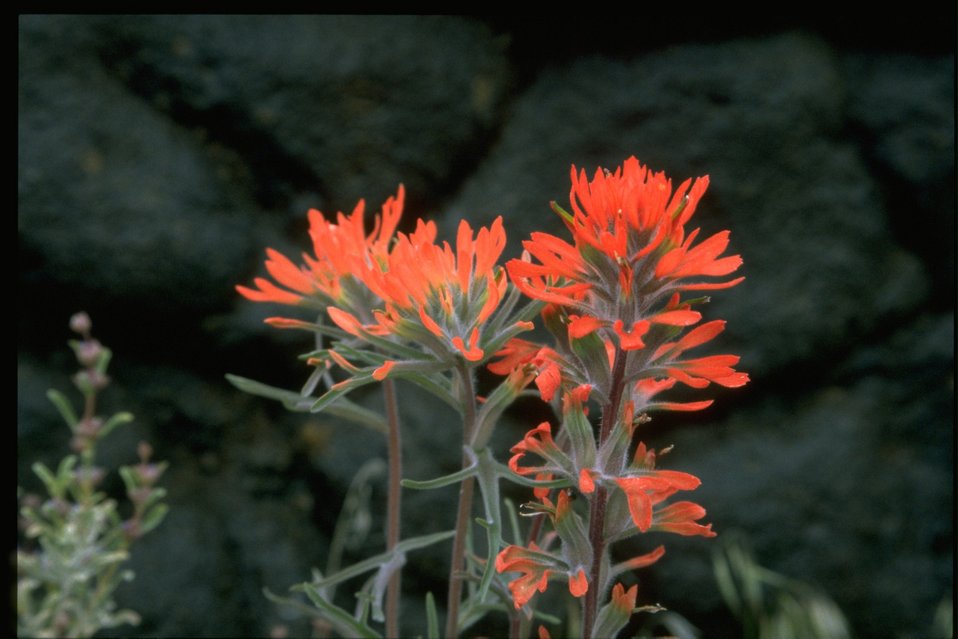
Closeup shot of Indian Paintbrush (Castilleja linariaefolia).